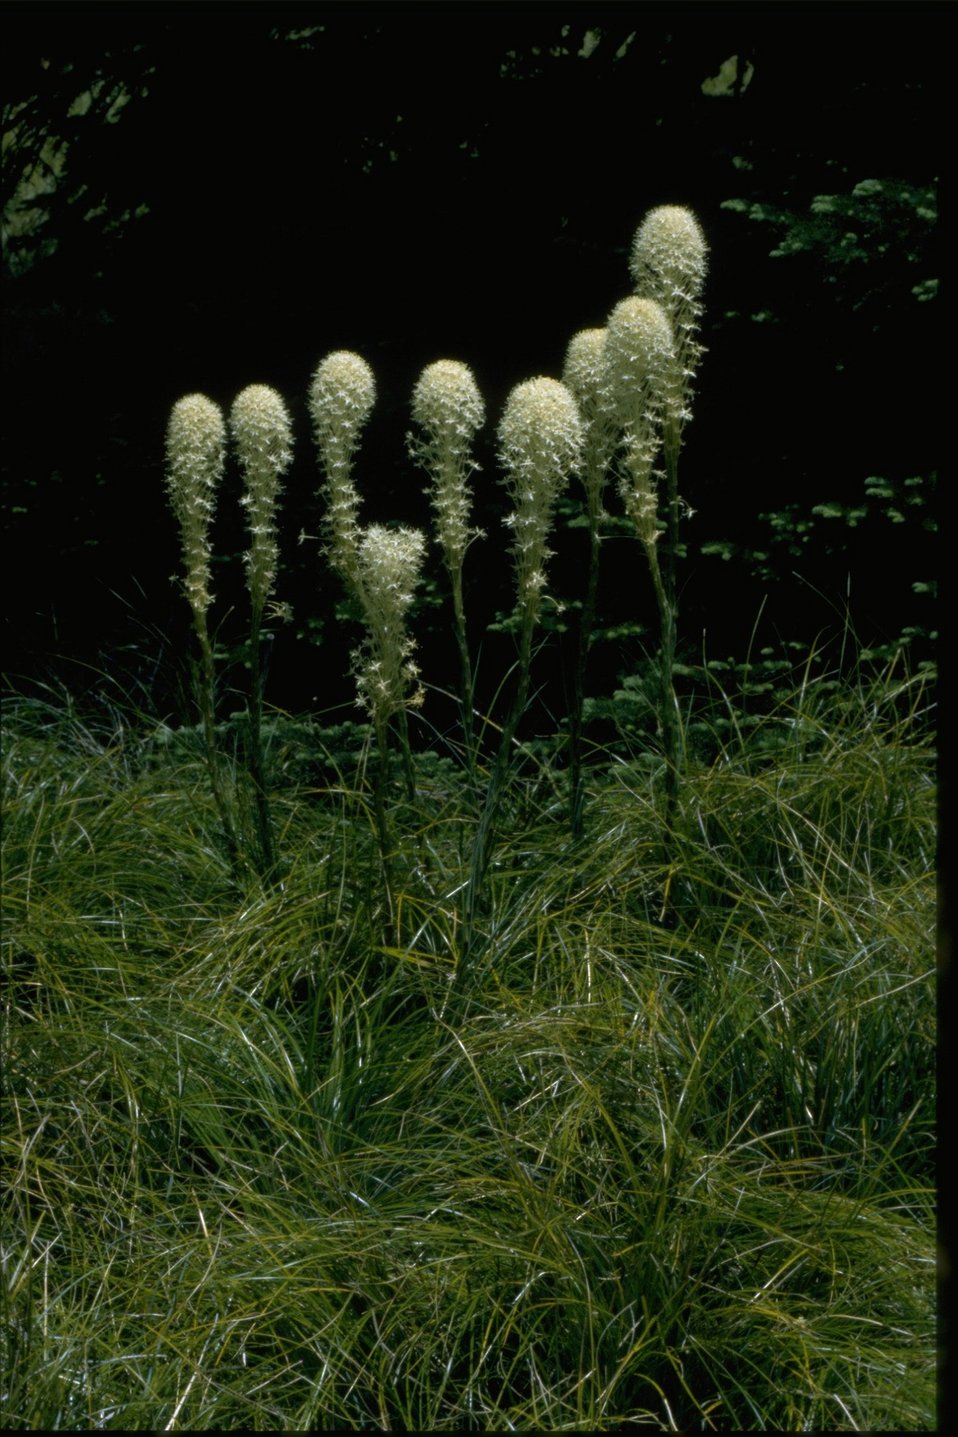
Medium shot of Xenophyllum tenax.